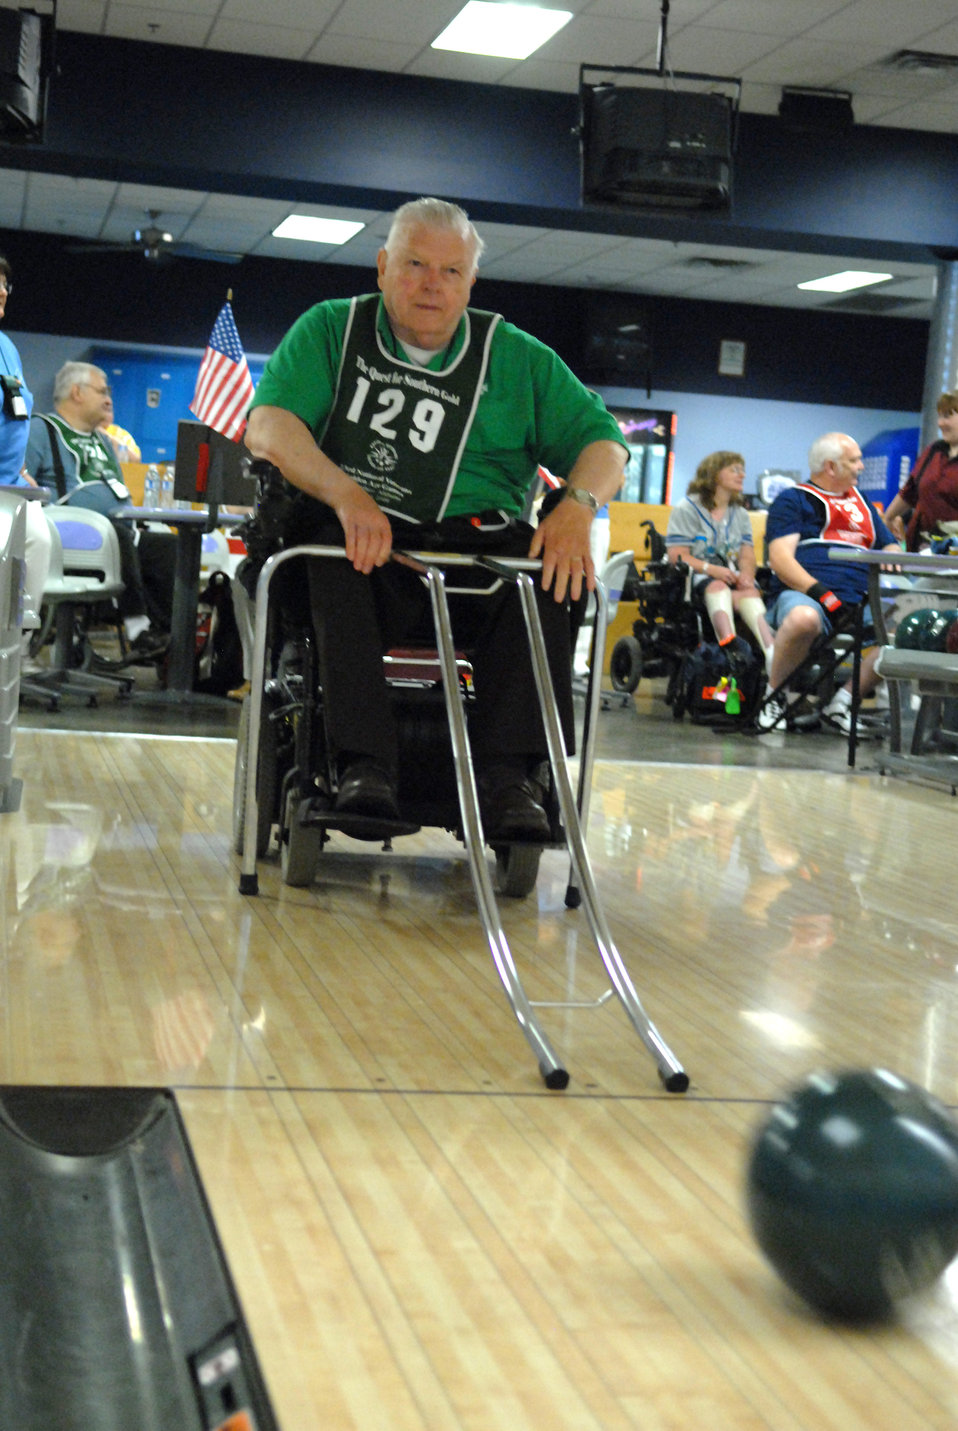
VA National Veterans Golden Age Games

Air Force and Korean War veteran Gustav Horn, 79, hopes for a strike as his bowling ball heads for the pins June 2 in Trussville, Ala., during the 23rd Annual National Veterans Golden Age Games.